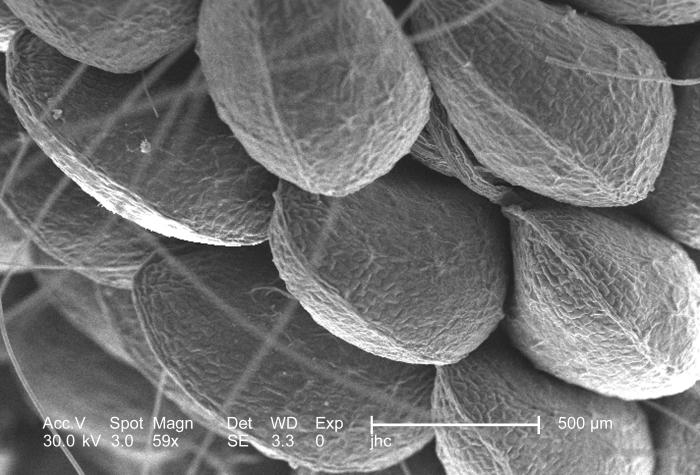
Under a low magnification of only 59x, this scanning electron micrograph (SEM) depicted the clustered exterior appearance of commonly growing wild strawberries, Fragaria virginiana, that were found growing in Lullwater Park, inside the Decatur, Georgia suburbs. The F. virginiana fruiting bodies are very similar to the more familiar store-bought varieties, and those who've tasted these fruits say that they're quite delicious.